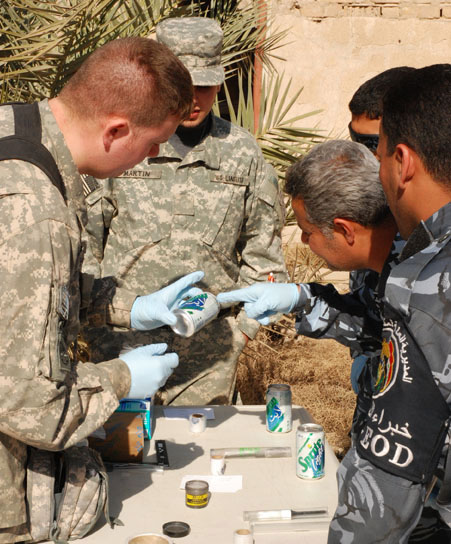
American servicemembers provide battlefield forensics

Members of the weapons intelligence team provide counter improvised explosive device intelligence through collection, analysis and tactical exploitation in support of Multinational Corps-Iraq in February in Iraq. By collecting evidence and staying ahead of the enemy, the WIT helps prepare U.S. and coalition forces prepare for future attacks.